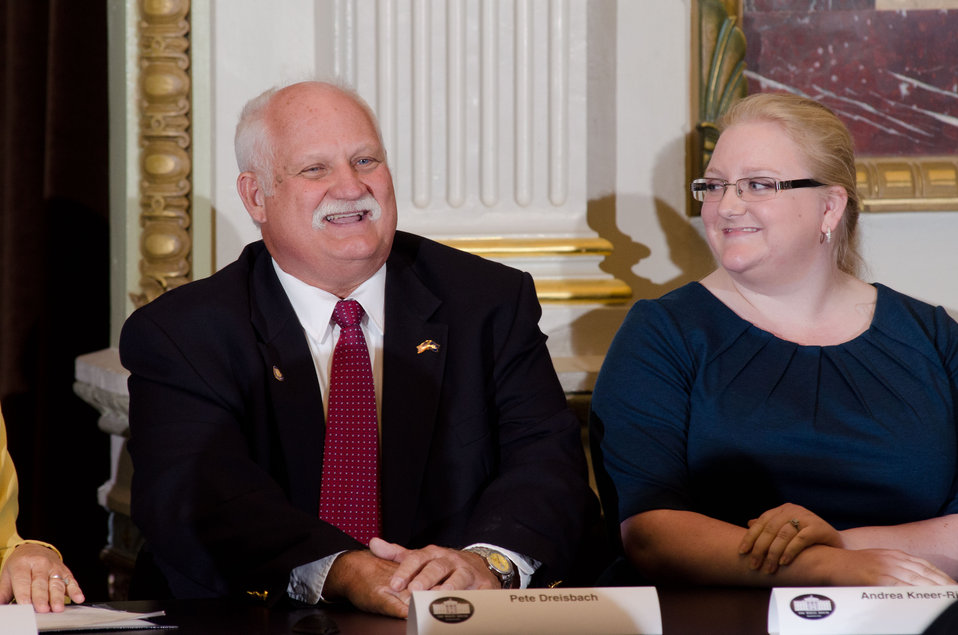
Kentucky FFA Leadership Training Center Director Dr. Pete Drisbach speaks at the Champions of Change Recognition event in the Indian Treaty Room at the Executive Office Building in Washington, D.C. on Tuesday, Oct. 9, 2012. The Champions of Change program was created to honor ordinary Americans doing great work in their communities. Each week, a different sector is highlighted and groups of Champions, ranging from educators to entrepreneurs to community leaders, are recognized for the work they are doing to serve and strengthen their communities.